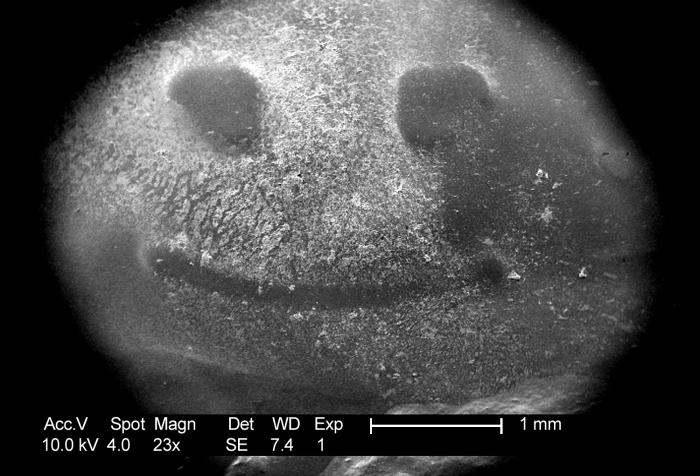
This electron micrograph depicts a 0.1�m polycarbonate membrane filter, which is coated with a C. jejuni bacterial film.